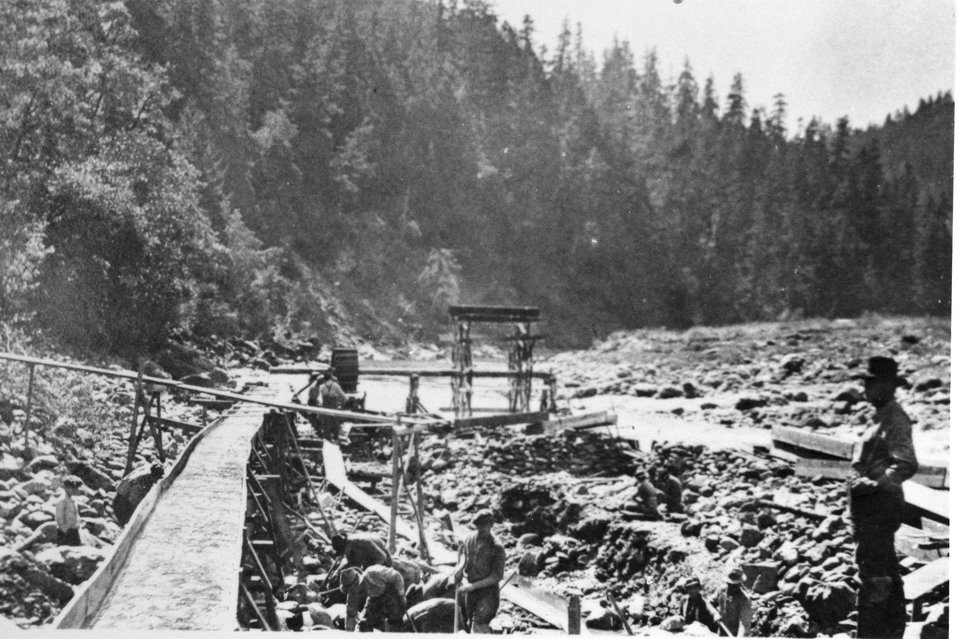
Gold Bar Mine at Illahe